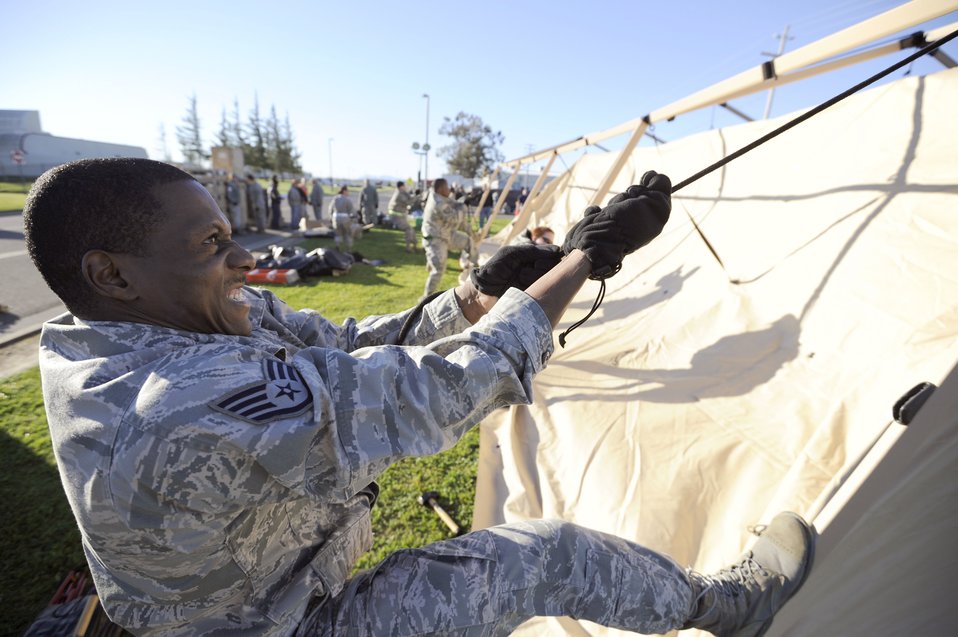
Pull harder!

Airmen from the 60th Medical Group and from the 615th Contingency Response Wing at Travis Air Force Base, Calif., erect a field hospital Feb. 8, 2011, during an exercise simulating an urban earthquake.